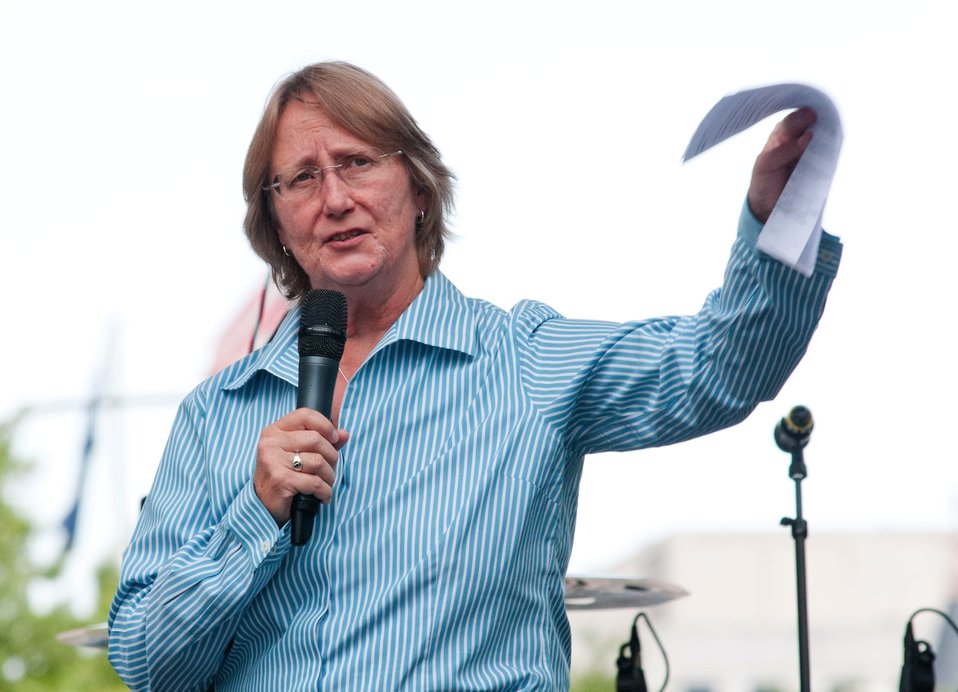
Agriculture Deputy Chief of Staff Carole Jett opens the Taste of D.C., event that highlights more than 70 eateries, 30 specialty beer providers, the United Service Organization (USO) Metropolitan Washington, and live bands. It is anticipated that more than 500,000 people will attend over the course of the three-day event, which extends from the White House to the Capitol, along Pennsylvania Ave. in Washington D.C. on Saturday, October 6, 2012.